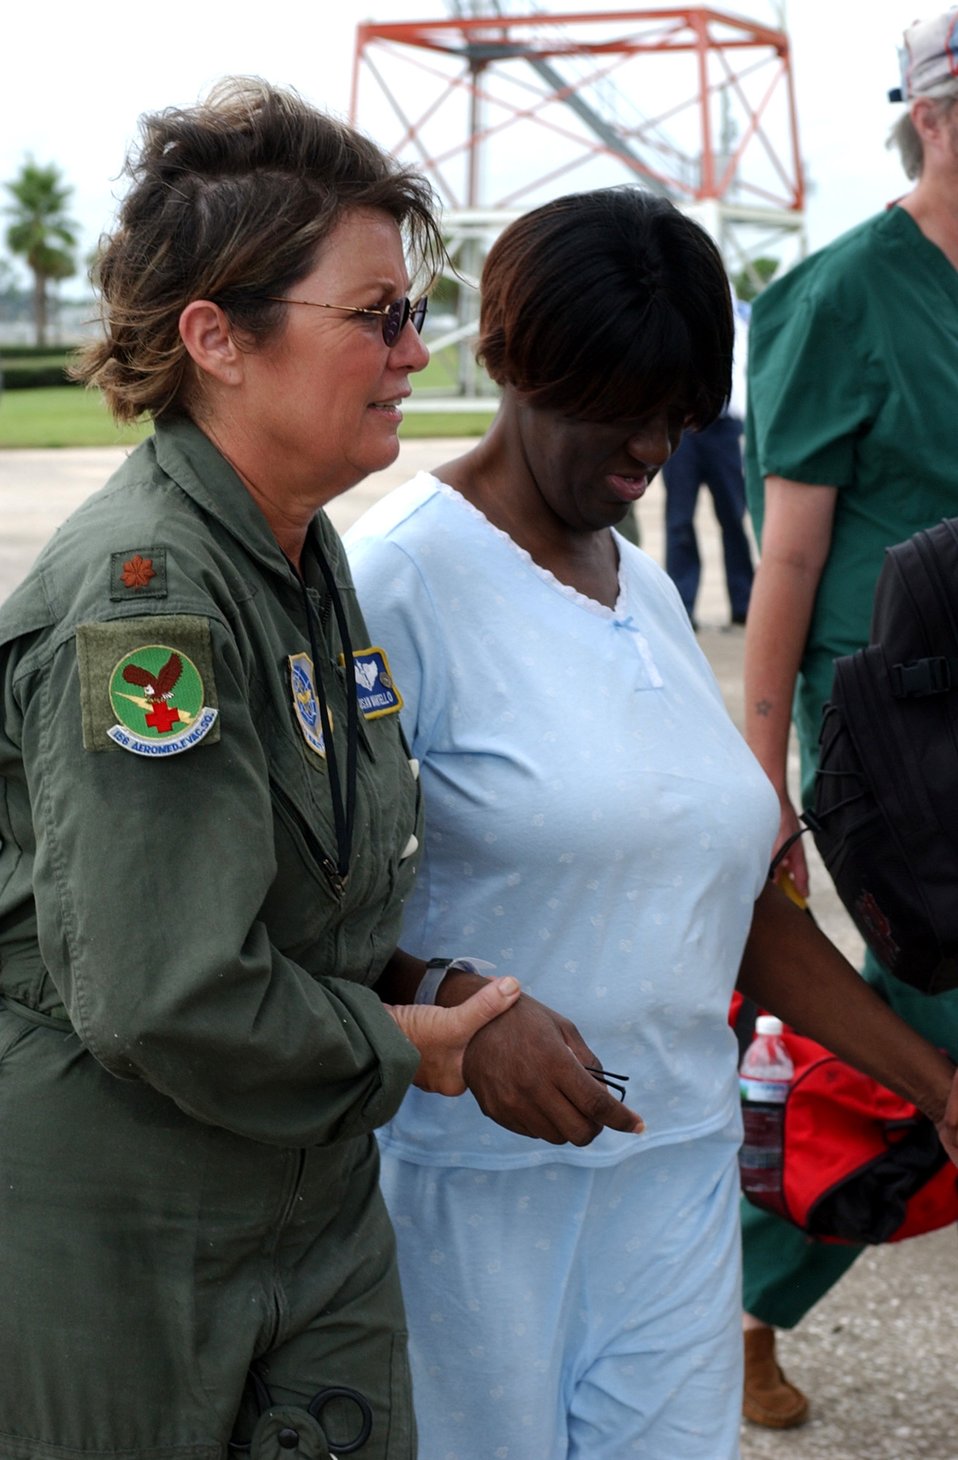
Heading Home

SEBRING AIRPORT, Fla. -- Maj. Susan Martello helps a Hurricane Rita evacuee onto a C-130 Hercules here Sept. 23. The aircraft's crew flew elderly evacuees back to Key West, Fla. following Hurricane Rita. The Air Force is assisting with Hurricane Rita humanitarian operations. The major is a nurse with North Carolina Air National Guard's 156th Aeromedical Squadron.